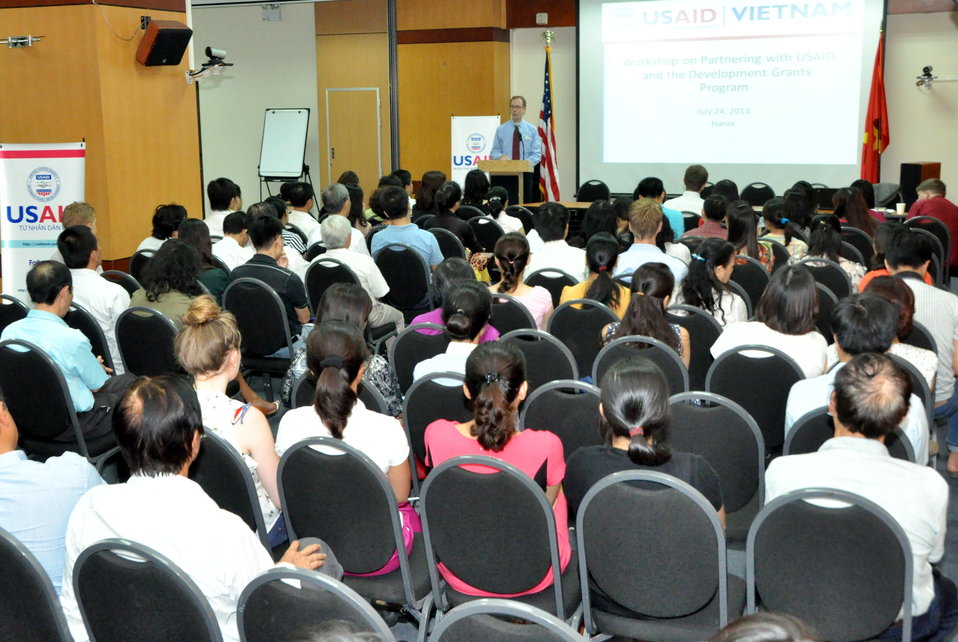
Development Grants Program Workshop in Hanoi

July 24, 2013